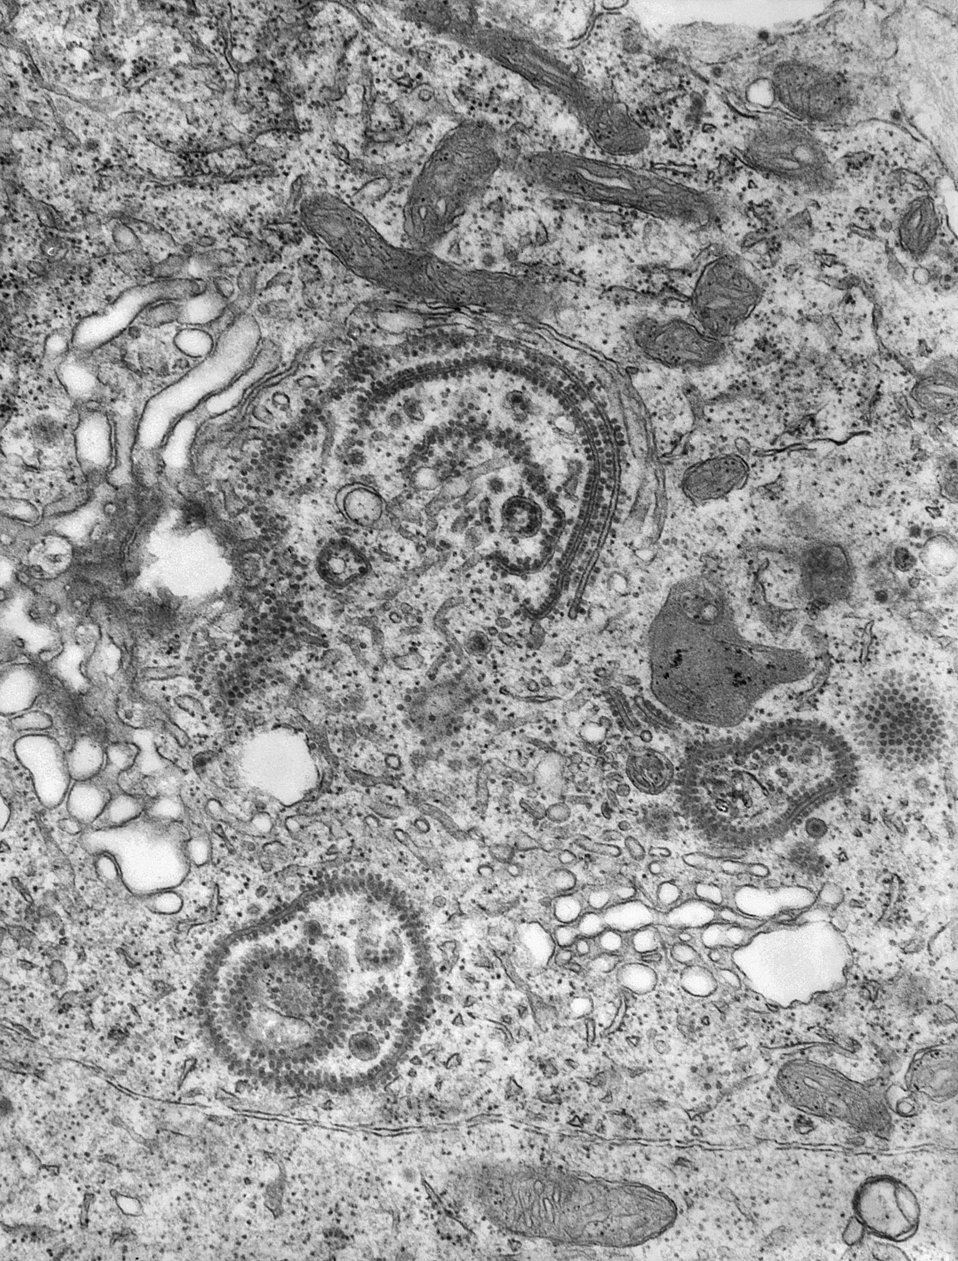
This 1975 transmission electron micrograph (TEM) revealed the presence of a number of Eastern Equine Encephalitis (EEE) virus virions that happened to be in a specimen of central nervous system tissue. EEE is a zoonotic arbovirus, which means that it's spead to human beings through the bite of an infected mosquito. EEE virus (EEEV) occurs in the eastern half of the United States where it causes disease in humans, horses, and some bird species. Because of the high mortality rate, EEE is regarded as one of the most serious mosquito-borne diseases in the United States. EEE is a Togaviridae virus family member, and the genus Alphavirus.